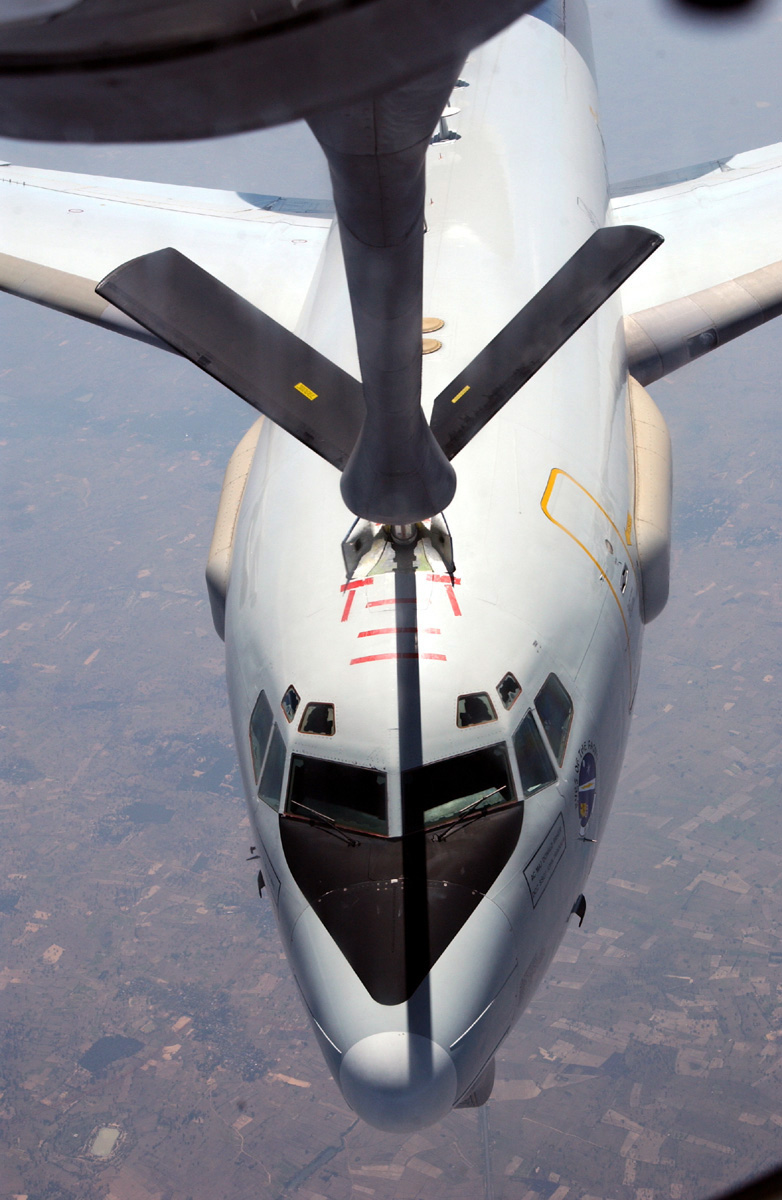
Fill 'er up!

KORAT ROYAL THAI AIR FORCE BASE, Thailand -- A KC-135 Stratotanker refuels an E-3 Sentry Airborne Warning and Control System here during Cope Tiger '04. The KC-135 is assigned to the 909th Air Refueling Squadron at Kadena Air Base, Japan. E-3s from Kadena and Elmendorf Air Force Base, Alaska, are controlling the sky in the annual, joint/combined multilateral exercise. More than 1,370 servicemembers from the United States, Royal Thai air force and Republic of Singapore air force are participating in the exercise.